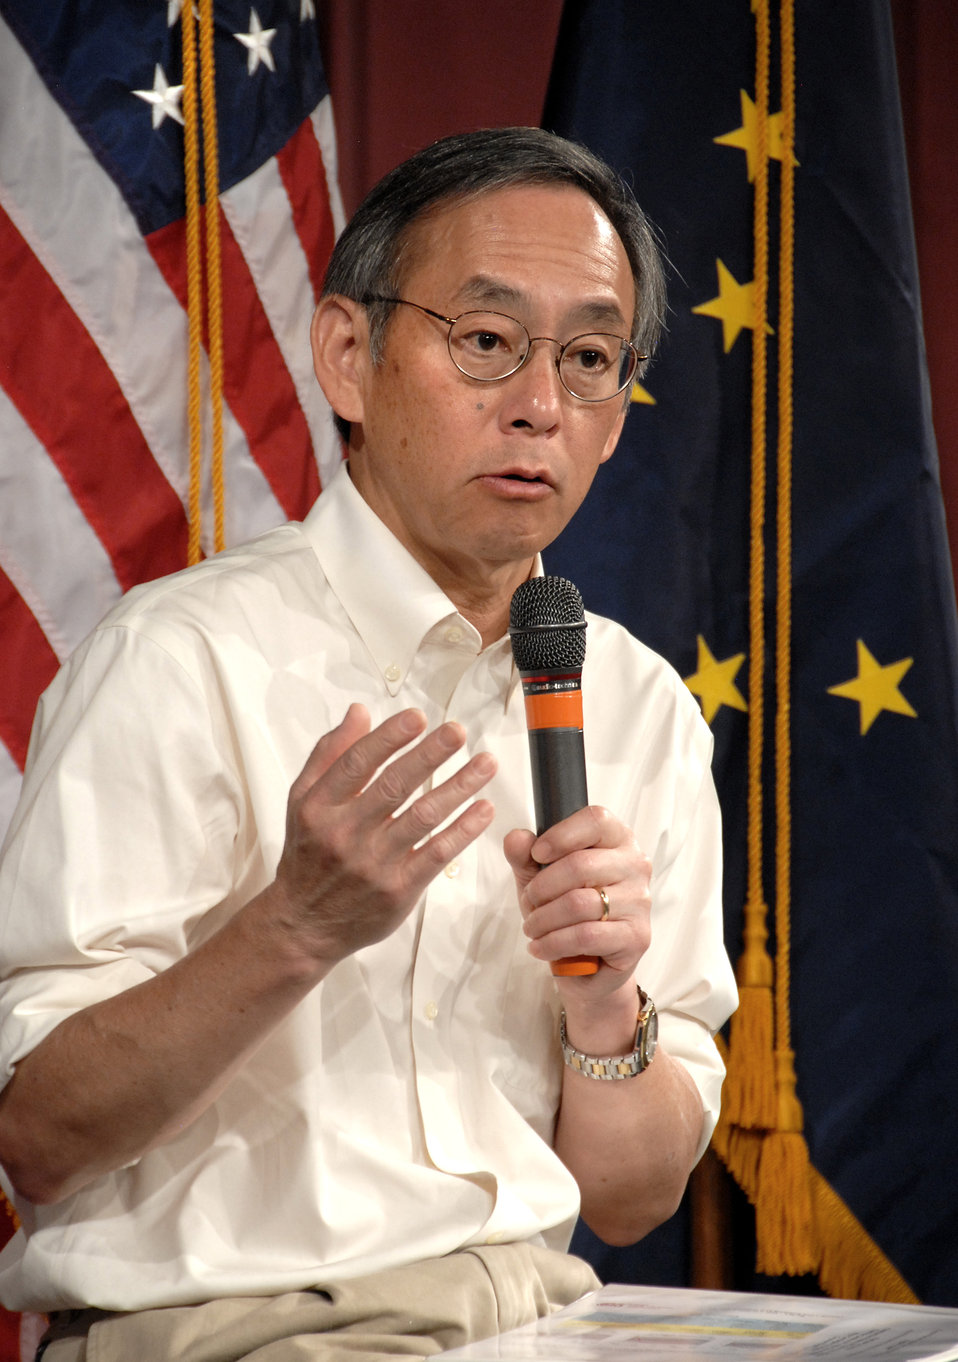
Rural Tour 0118

Rural Tour Alaska Aug 2009